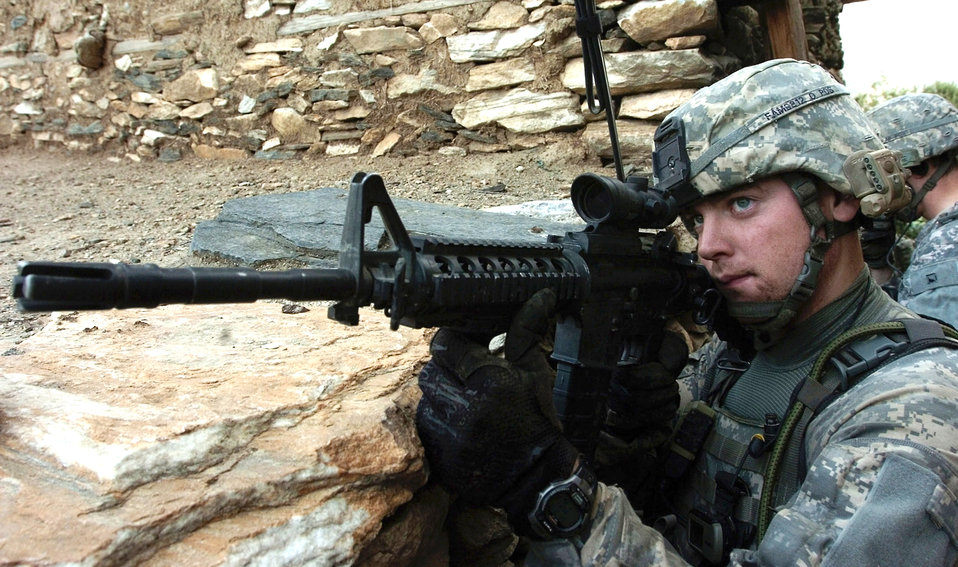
Gunfight and Airstrike in Korengal Valley

Senior Airman Gregory Moulton fires at insurgent positions Aug. 13 during an early morning gun battle in the Korengal Valley in Afghanistan's Kunar Province. Airman Moulton is attached to the U.S. Army's Company B, 2nd Battalion, 12th Infantry Regiment, 4th Brigade Combat Team, 4th Infantry Division, based at Fort Carson, Colo. Many Airmen fight side by side with U.S. Army units, serving as liaisons between ground forces and Air Force bombers and fighters patrolling Afghan airspace. International Security Assistance Force troops across Afghanistan have increased operations in recent months, in order to ensure safety and security during Afghanistan's second national election, scheduled for the end of August.